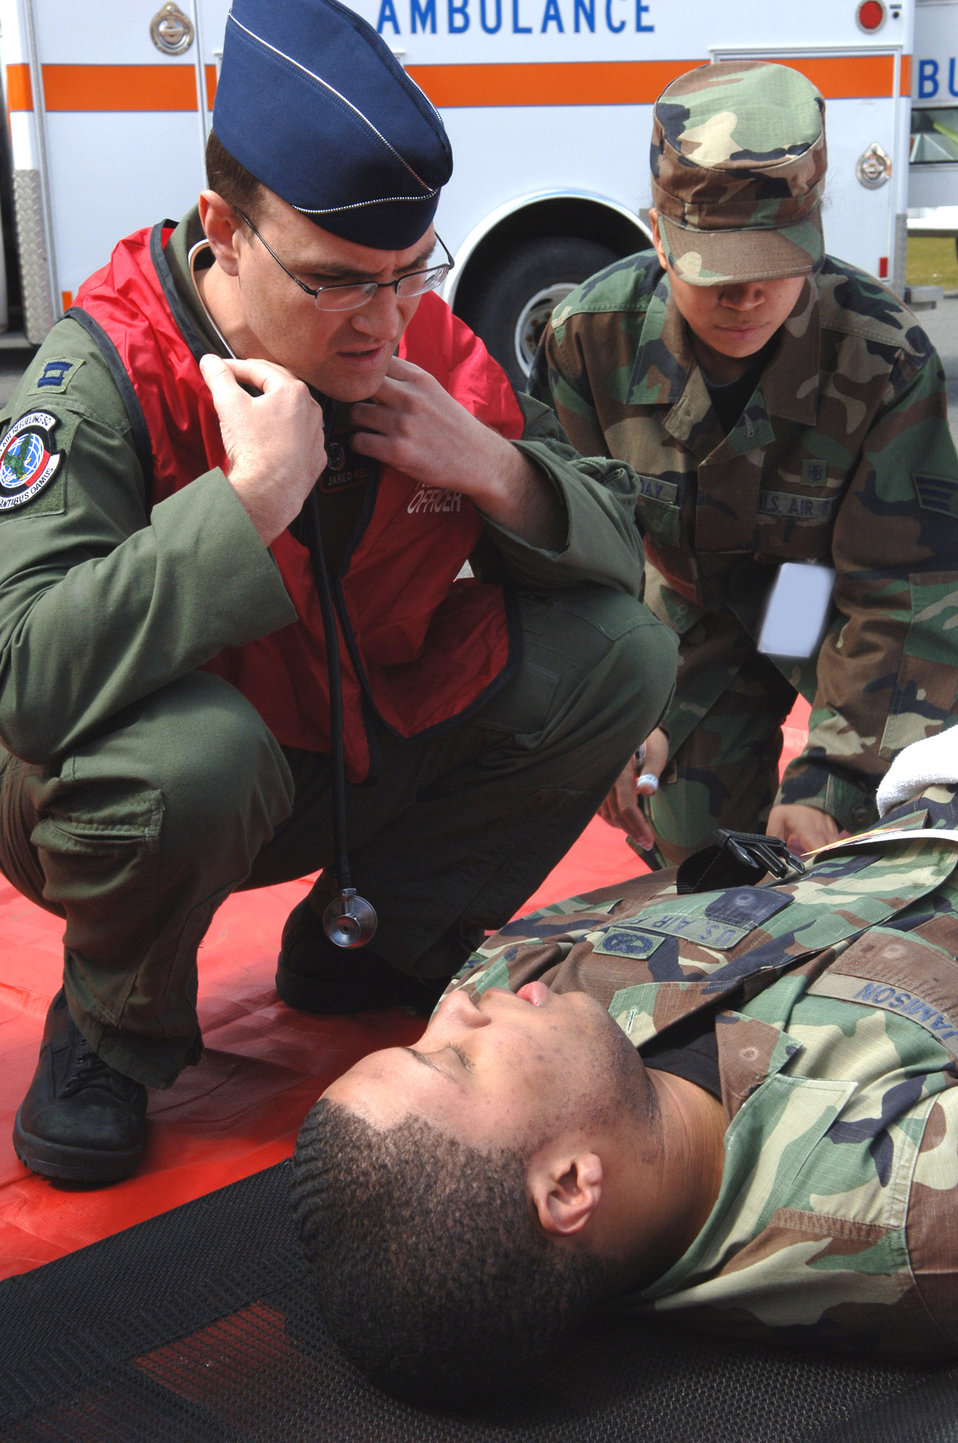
Fairchild puts readiness to the test

Capt. Jared Kelstrom and Senior Airman Karen Caminggay, evaluate Airman 1st Class Antwuan Jamison, and prepare to measure his vital signs. Airman Jamison was one of the personnel wounded by a simulated weapon of mass destruction during an exercise April 19 at Fairchild Air Force Base, Wash. Captain Kelstrom is with the 92nd Aeromedical Dental Squadron. Airman Caminggay is assigned to the 92nd Medical Support Squadron. Airman Jamison is with the 92nd Logistics Readiness Squadron.